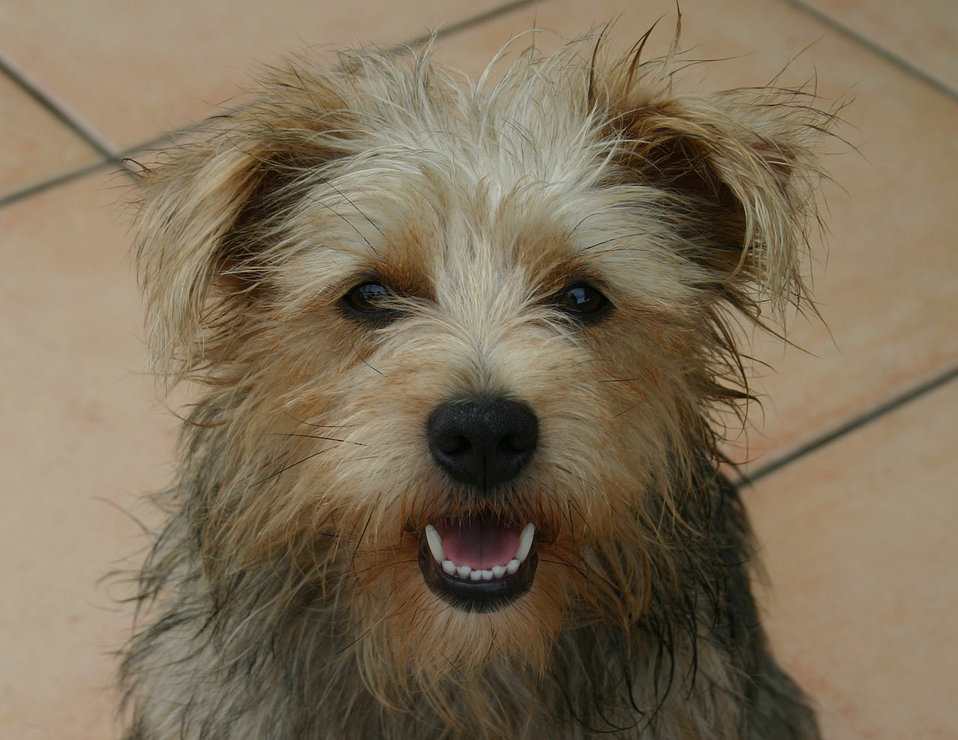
Annie

My other best dog, annie.